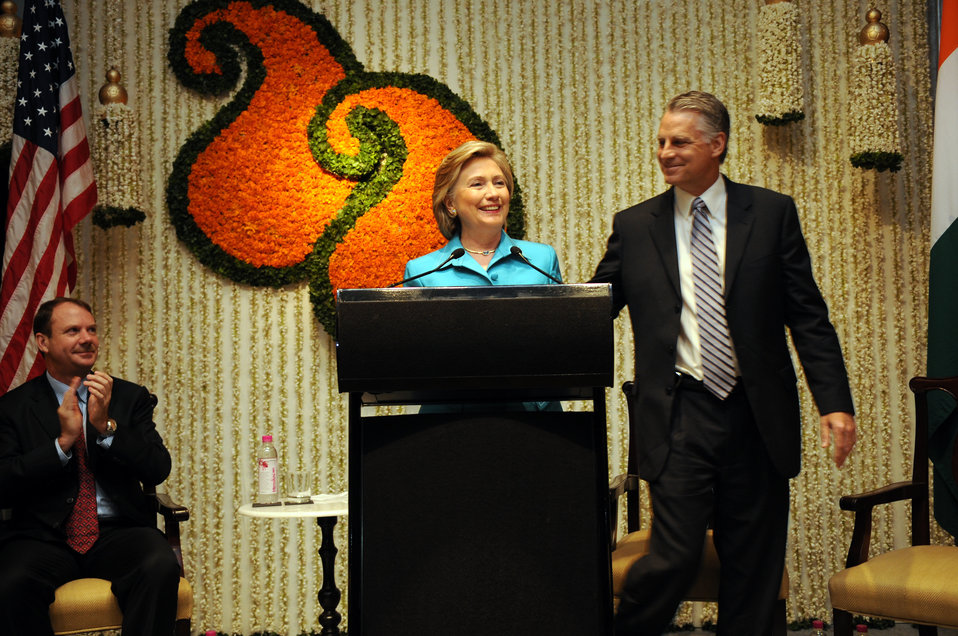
Secretary Clinton Addresses Mumbai Consulate Staff

U.S. Secretary of State Hillary Rodham Clinton on stage with Timothy J. Roemer, U.S. Ambassador-Designate to India (R), and Consul General Paul Folmsbee (L) during the address to Mumbai Consulate staff at the Taj Palace Hotel in Mumbai, India July 19, 2009.